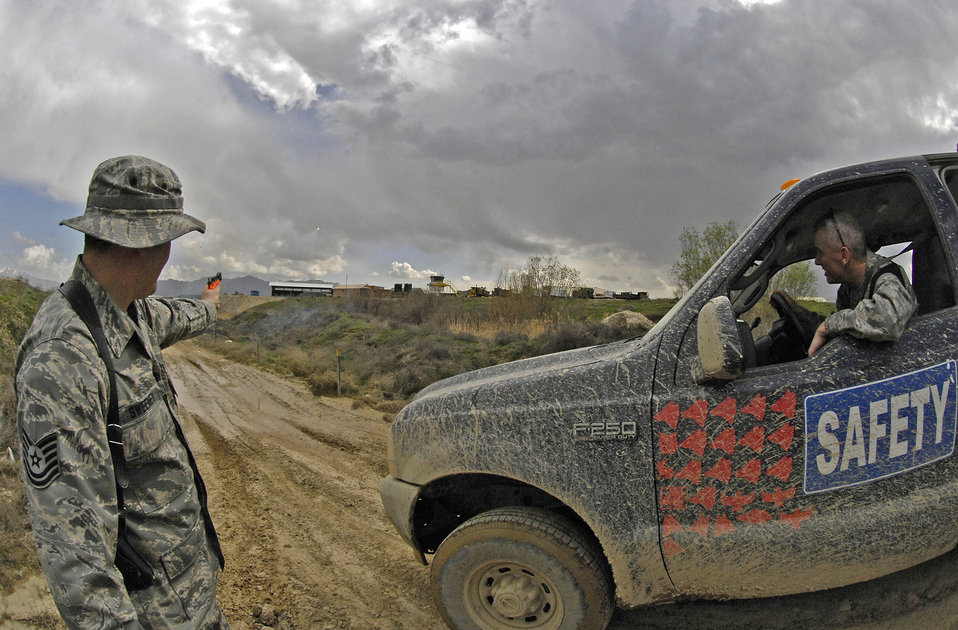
Safety experts spearhead efforts to minimize bird strikes

Tech. Sgt. Shane Sweeney fires off pyrotechnic